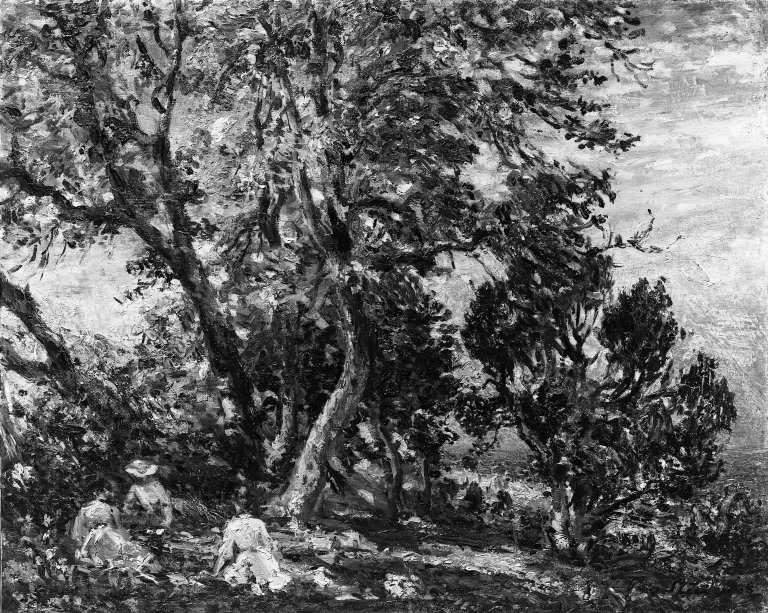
Brooklyn Museum - Under the Trees - Philip Wilson Steer - overall